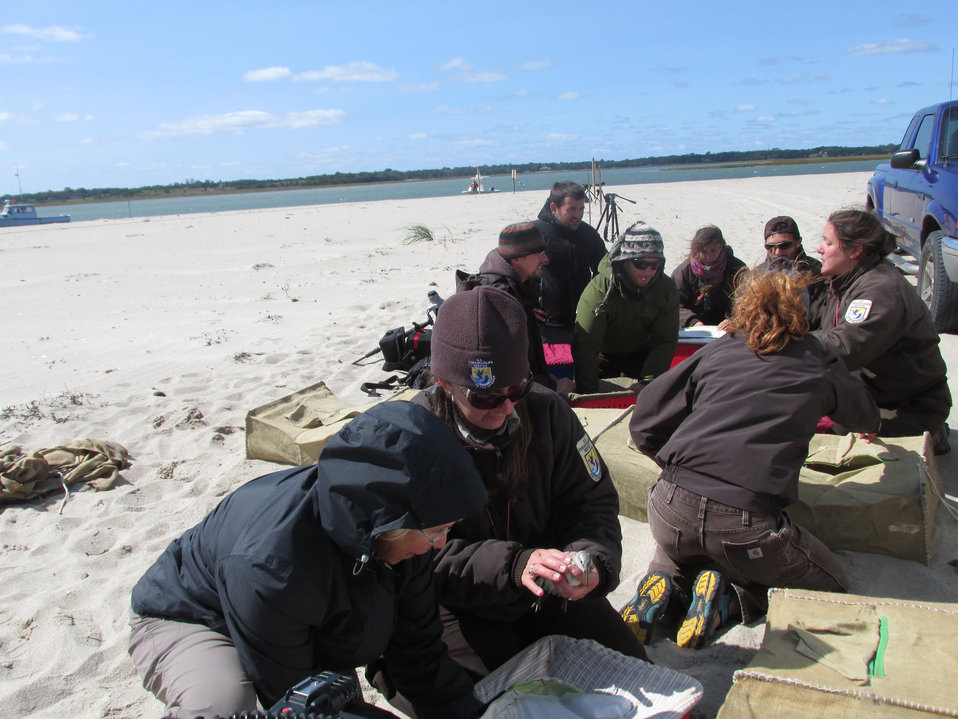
Red knot cannon netting in Cape Cod

The team prepares to process red knots and black-bellied plovers at the north end of Nauset Beach in Orleans/Eastham, Mass.